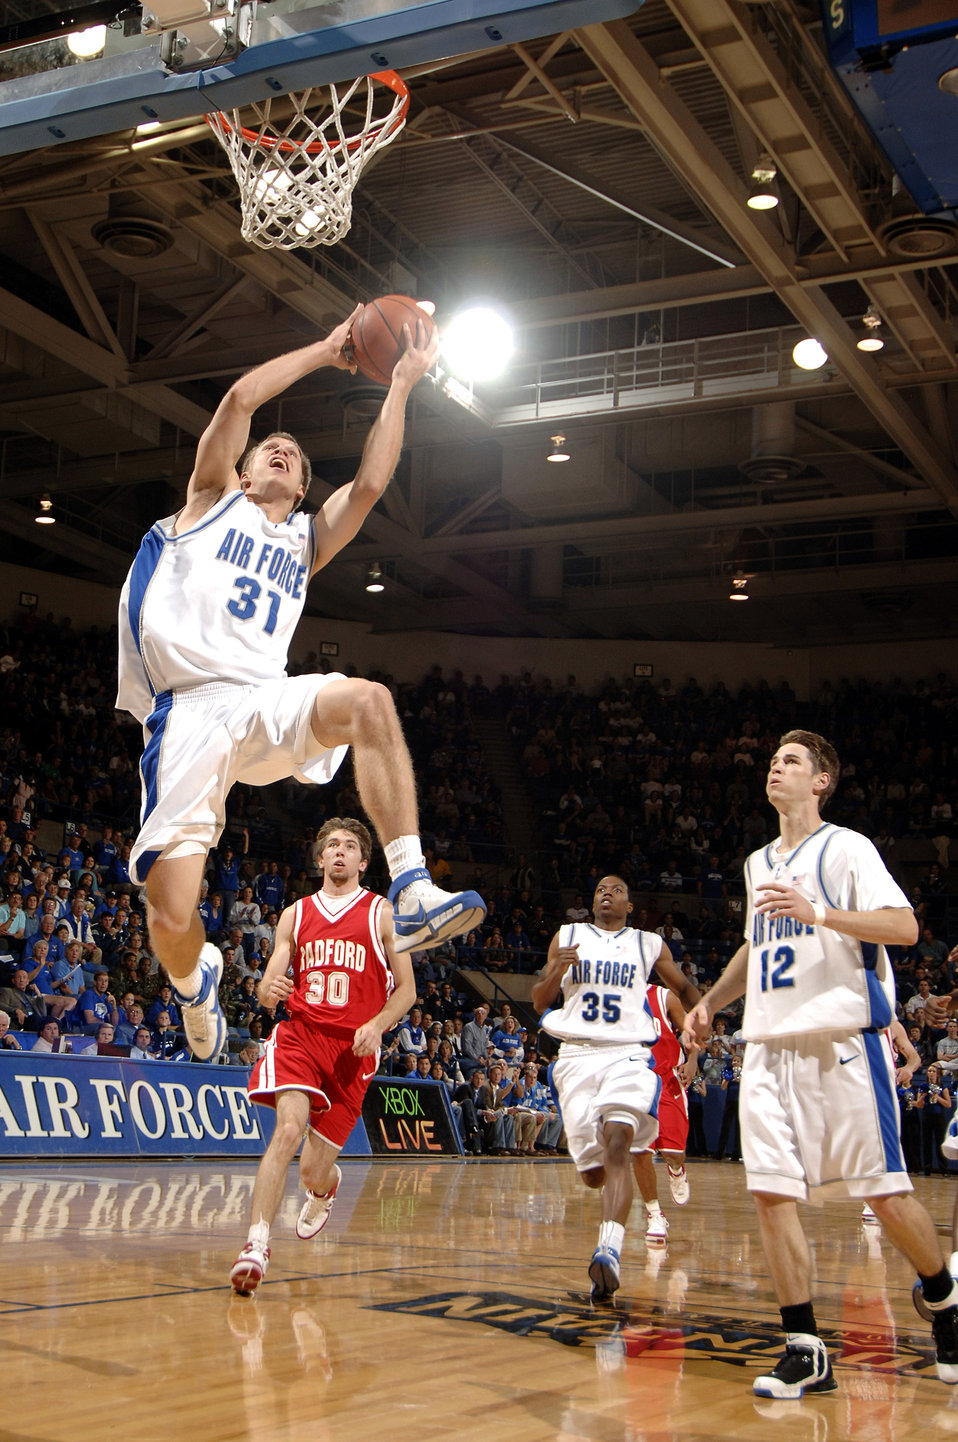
Falcons score overtime victory

Junior forward Matt Holland pulls down a rebound as the Air Force Falcons defeated the Radford Highlanders 52-47 in overtime Nov. 19 at Clune Arena. Air Force, under first-year coach Jeff Reynolds, is 4-0 on the season.